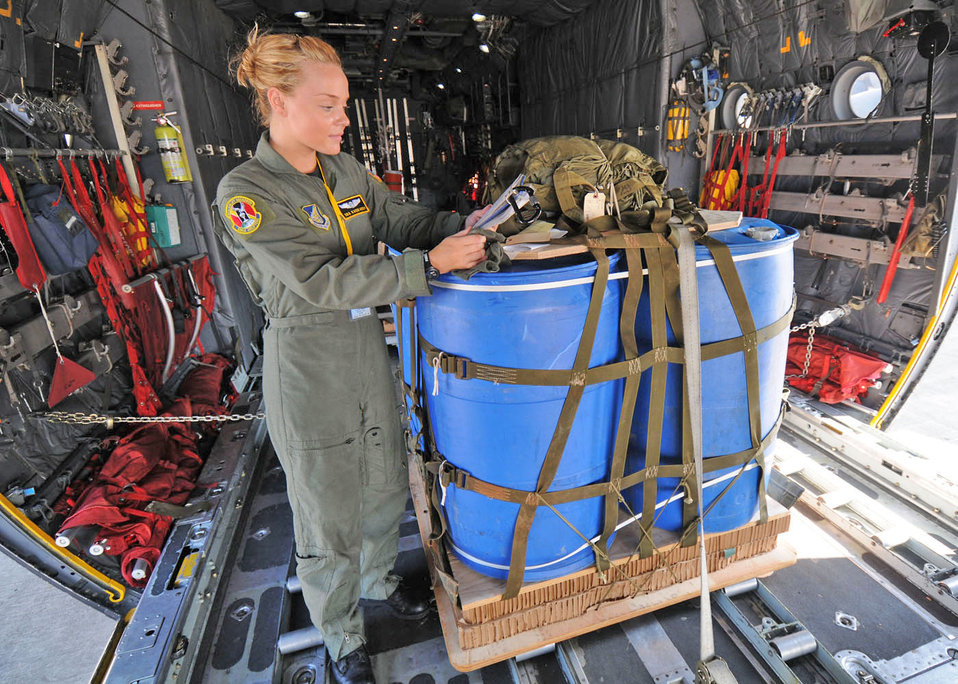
Pacific Airlift Rally 2009 kicks off

Senior Airman Kacie Adsit reads through technical orders before a heavy equipment drop from a C-130 Hercules Aug. 19 at Subang Royal Mayaysian Air Force Base, Malaysia. She is participating in Pacific Airlift Rally 2009. Airman Adsit is a 36th Airlift Squadron loadmaster from Yokota Air Base, Japan.